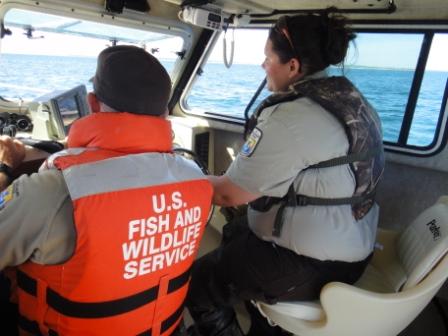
Law Enforcement SCEP

A law enforcement SCEP at the Eastern Massachusetts National Wildlife Refuge Complex.